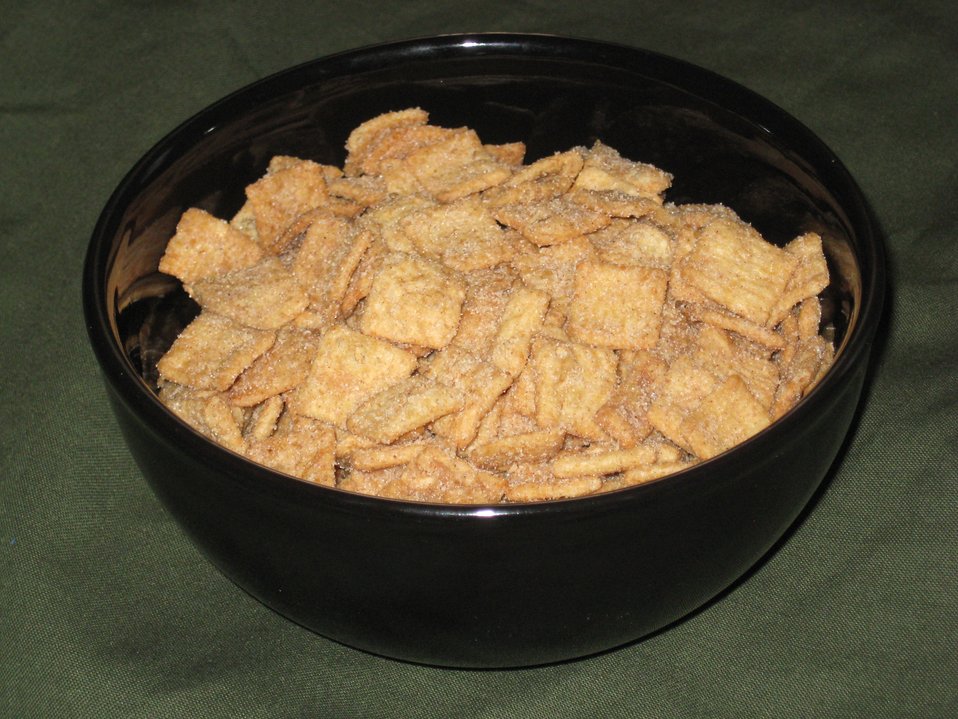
A Bowl Of Cinnamon Toast Crunch